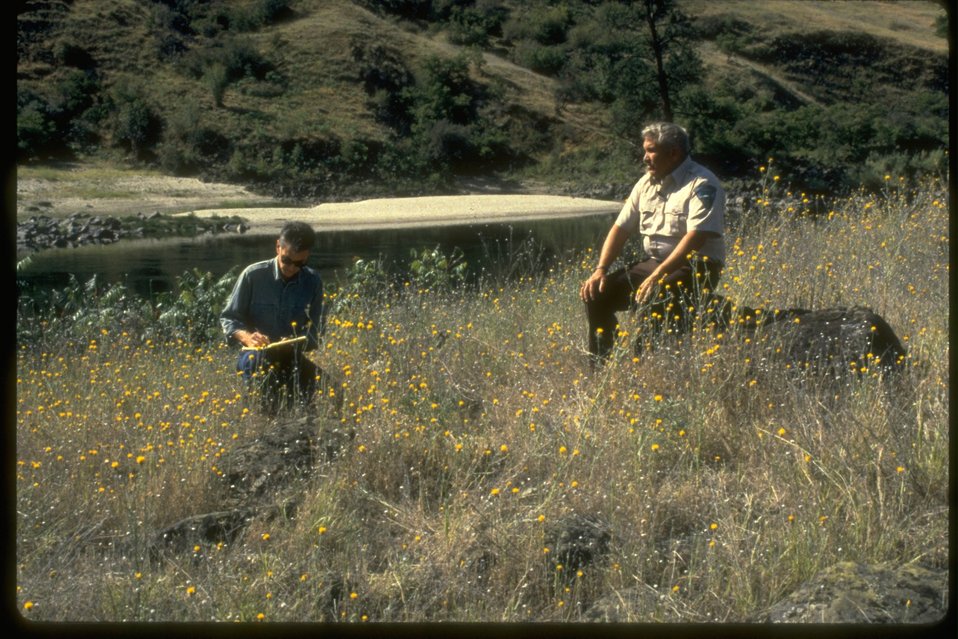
Area manager explaining how Starthistle has taken away his ability to meet the objectives of the Wilderness Study Area along the Lower Salmon River.